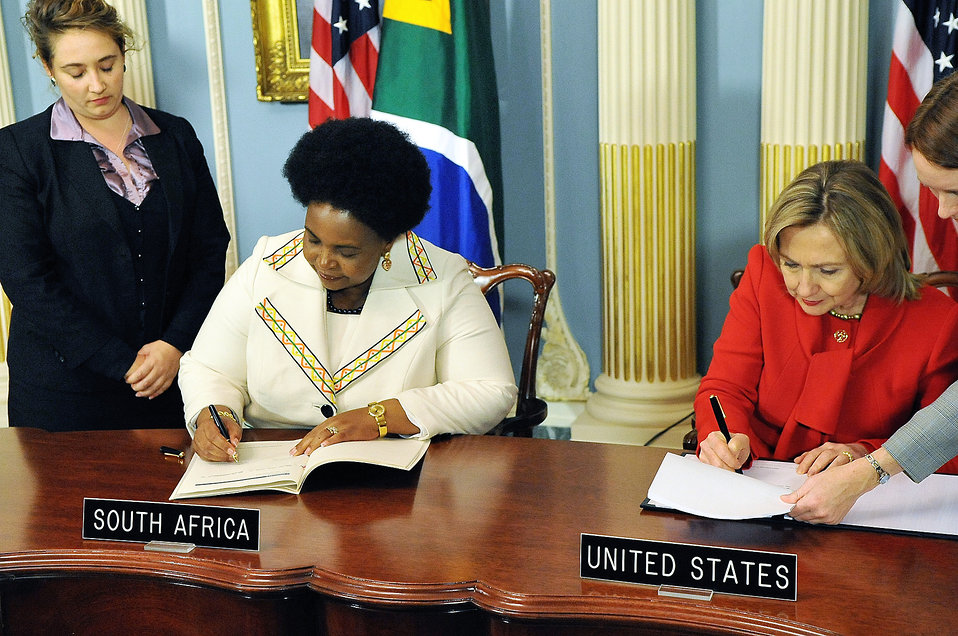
Secretary Clinton and South African Minister Maite Nkoana-Mashabane Sign the PEPFAR Agreement

U.S. Secretary of State Hillary Rodham Clinton and South African Minister Maite Nkoana-Mashabane sign the PEPFAR Partnership Framework Agreement with in the Treaty Room at the U.S. Department of State in Washington, D.C., on December 14, 2010.